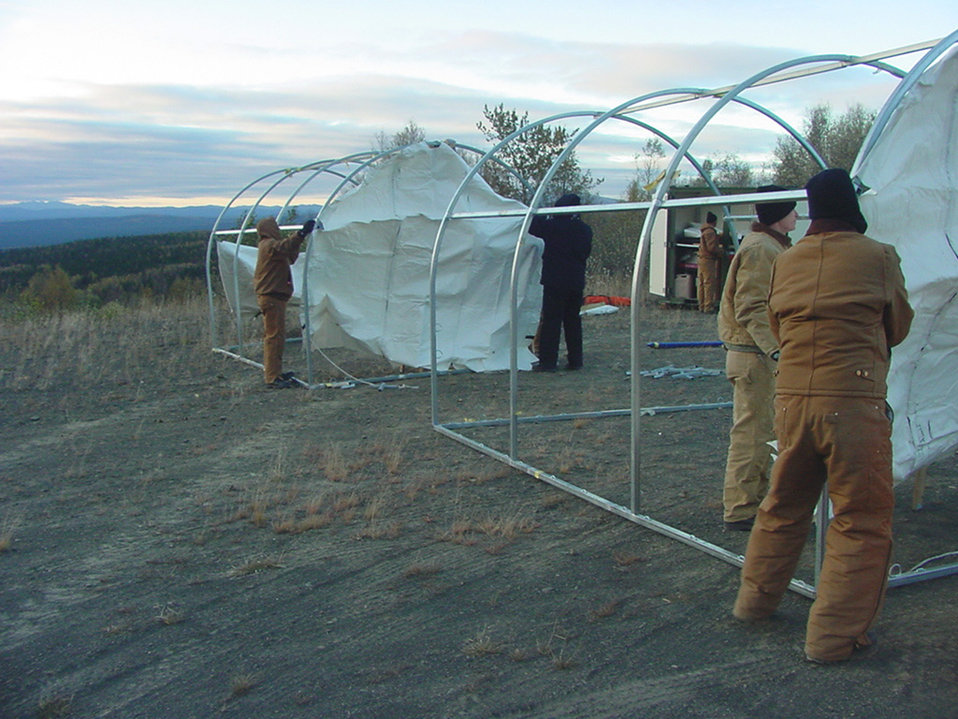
Airmen deploy for fuel-spill exercise

TATALINA, Alaska -- People from the 611th Civil Engineer Squadron spill team here set up an entry control point and a decontamination area during an annual three-day fuel-spill-response exercise. Arctic tents serve as